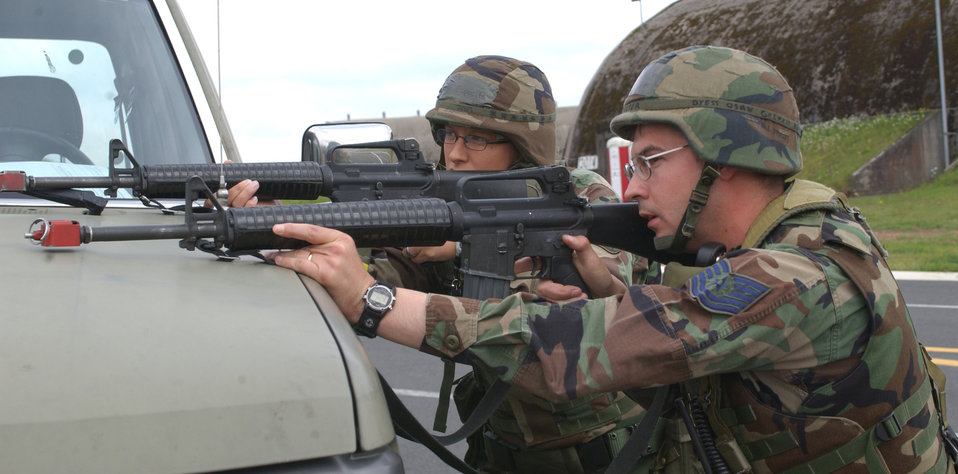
In our sights

SPANGDAHLEM AIR BASE, Germany -- Tech. Sgt. Mark Klinefelter (right) and Airman 1st Class Diana Esposito provide front line security on the flightline during exercise Harley Saber 04-04 here June 22. Sergeant Klinefelter and Airman Esposito are security forces Airmen with the 52nd Security Forces Squadron.